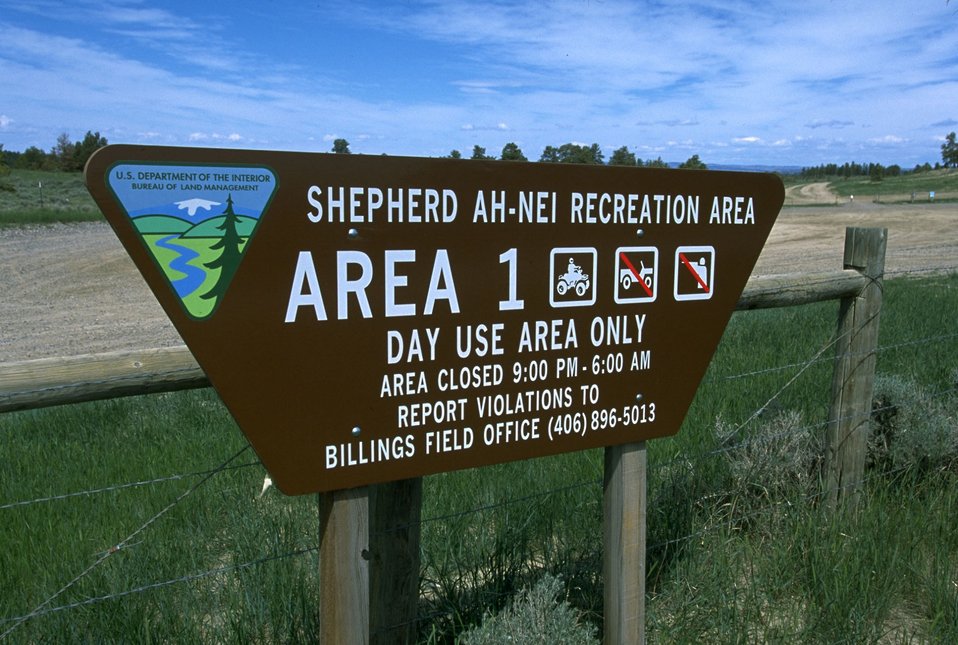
Entrance sign to the Shepherd Ah-Nei Recreation Area, Area 1